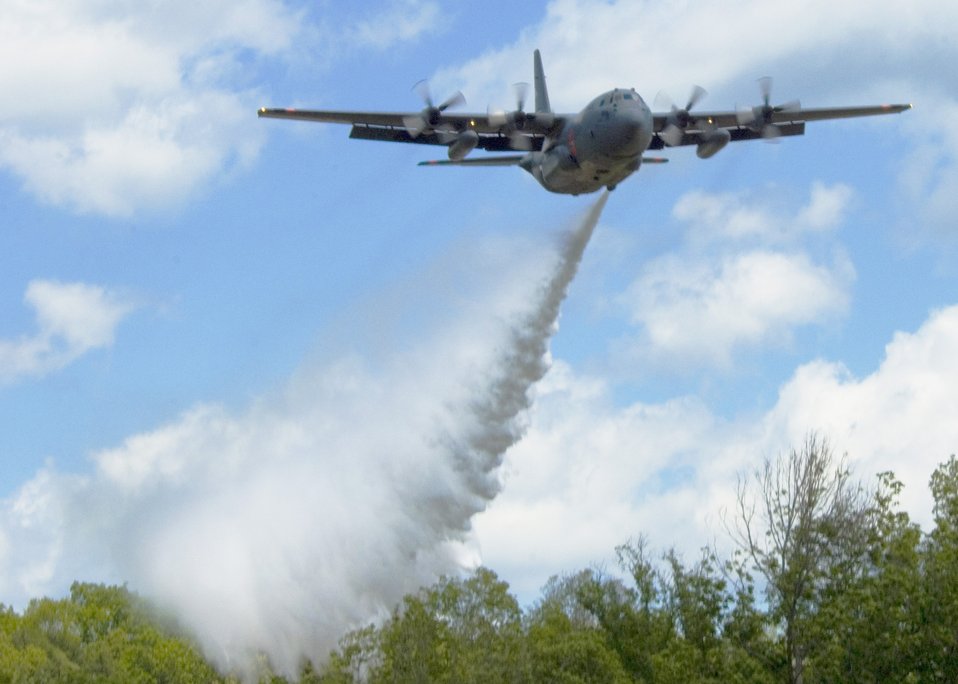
Hitting the mark

A C-130 Hercules drops water over the treetops while training with the Modular Airborne Fire Fighting System near Greenville, S.C., April 28, 2010. The aircraft is from the 146th Airlift Wing at Channel Islands Air National Guard Base at Point Mugu, Calif.